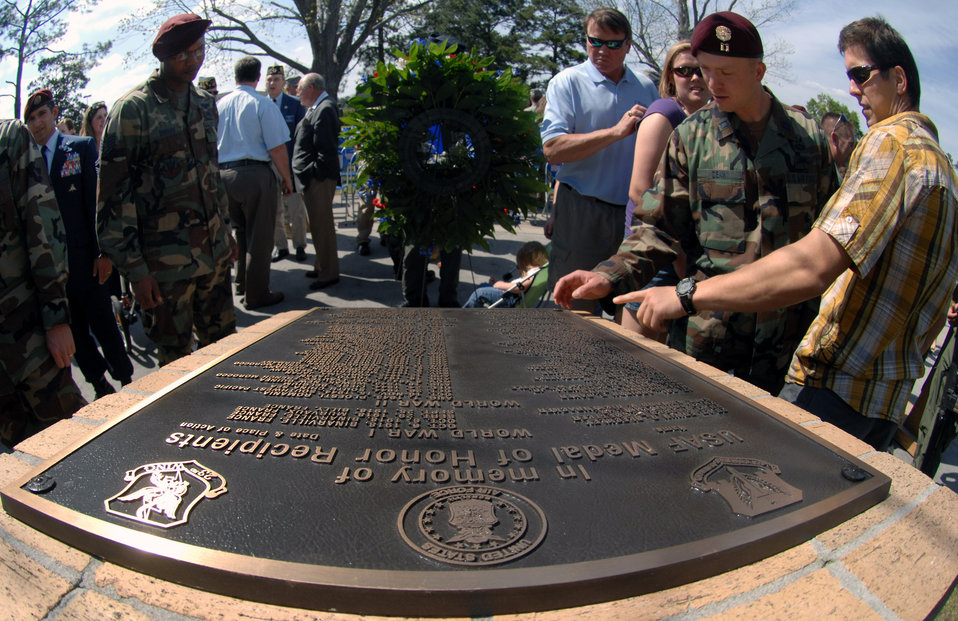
Pitsenbarger re-honored at Moody after 42 years

Friends, family and members of the 23rd Wing gather around a monument dedicated to the Airmen who received the Medal of Honor at Moody Air Force Base, Ga., April 18. The ceremony was to add the name of Airman 1st Class William Pitsenbarger, an Air Force pararescueman who lost his life while treating wounded soldiers during the Vietnam War.